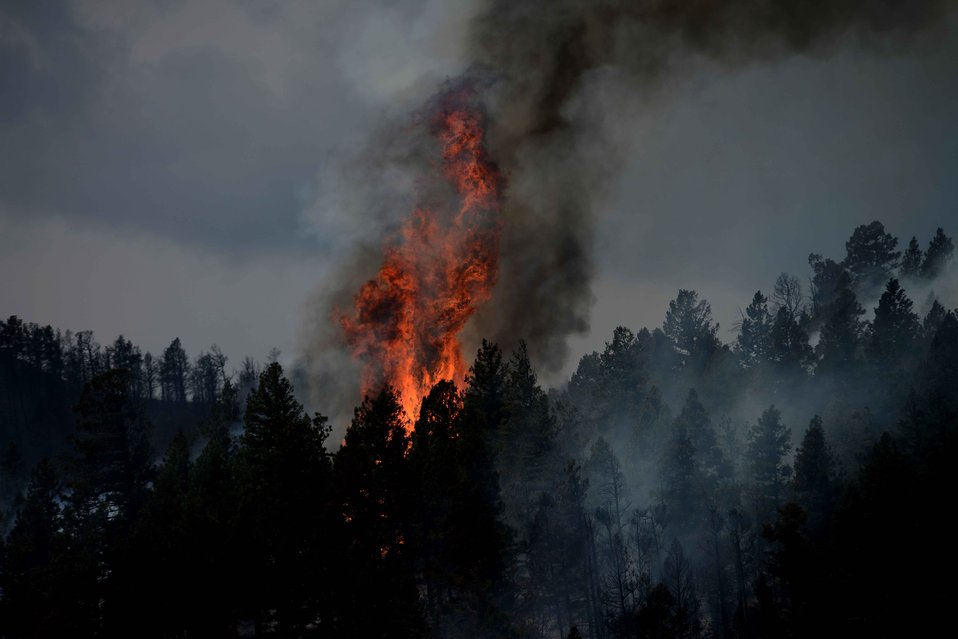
Towering inferno

Flames tower over the treeline in the Mount Saint Francois area of Colorado Springs, Colo., June 28, 2012. Air Force and civilian firefighters continue to battle several fires in Waldo Canyon.